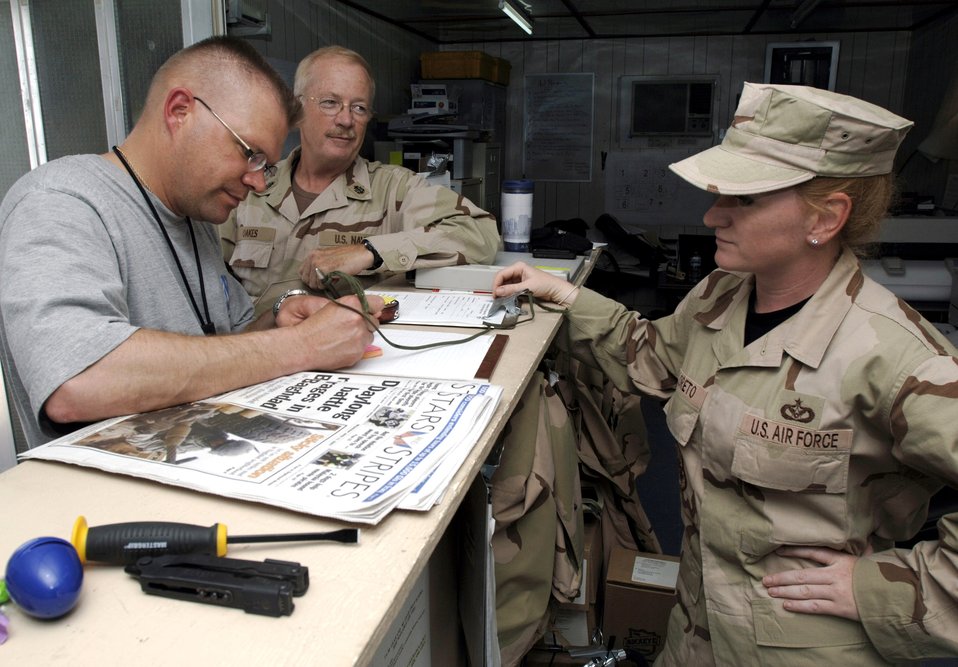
Airmen show 'can-do' spirit in joint-force environment

Staff Sgt. Rebecca Diloreto assists Chief Petty Officers Glen Oaks and Stanley Rozum in personnel matters at Camp Patriot an undisclosed location in Southwest Asia. Sergeant Diloreto is an engineering assistant for the 586th Expeditionary Mission Support Group Det. 1.